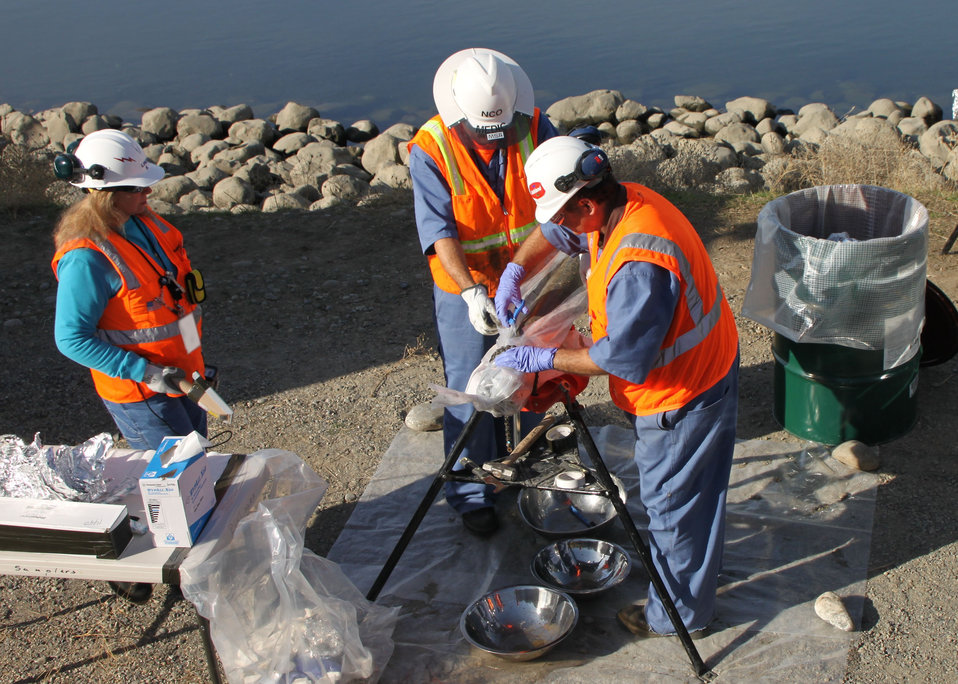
100NR2 sampling

Workers sample a section of soil removed from a well site along the shoreline of the Columbia River at the Hanford Site. The sampling helps determine what contaminants are present at different depths in the soil.